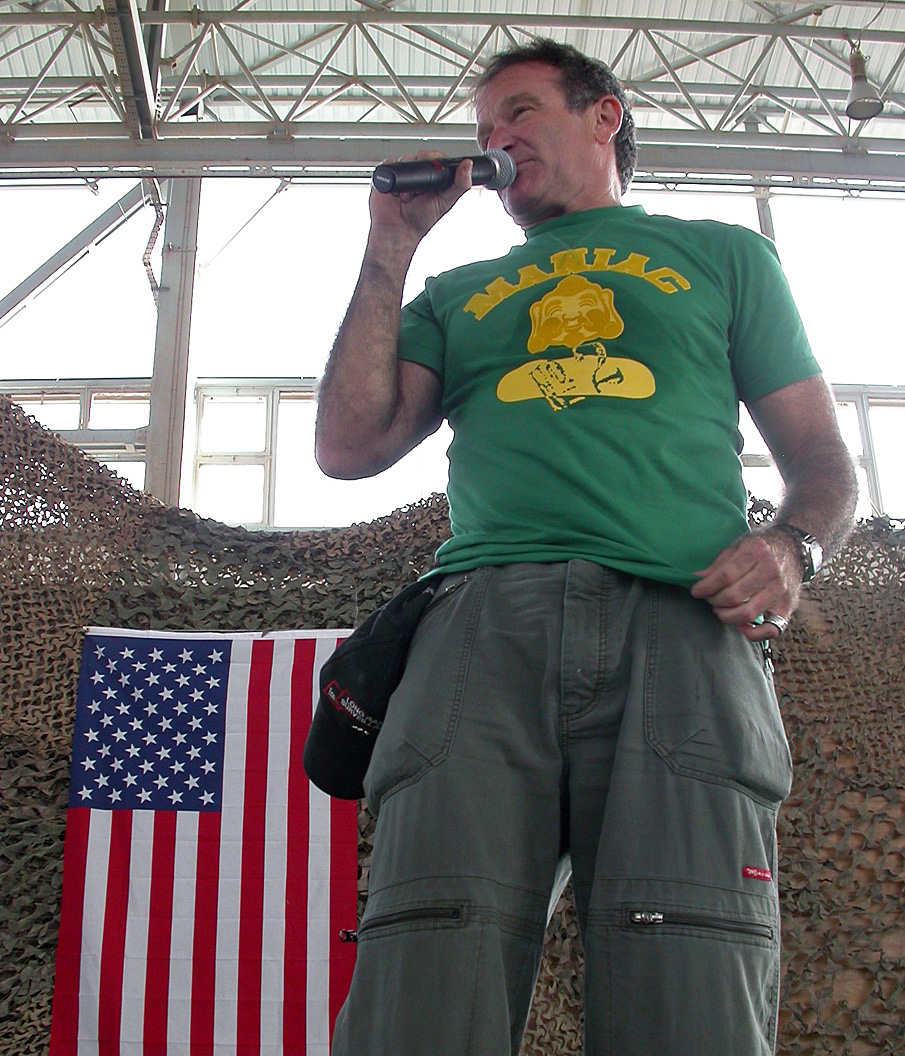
Stars tour Iraq for holidays

BALAD AIR BASE, Iraq -- Academy Award-winning actor and comedian Robin Williams performs for more than 300 airmen and soldiers deployed here Dec. 18. Also with him were Olympic gold medalist and professional wrestler Kurt Angle, NASCAR driver Mike Wallace and former model and television personality Leeann Tweeden.